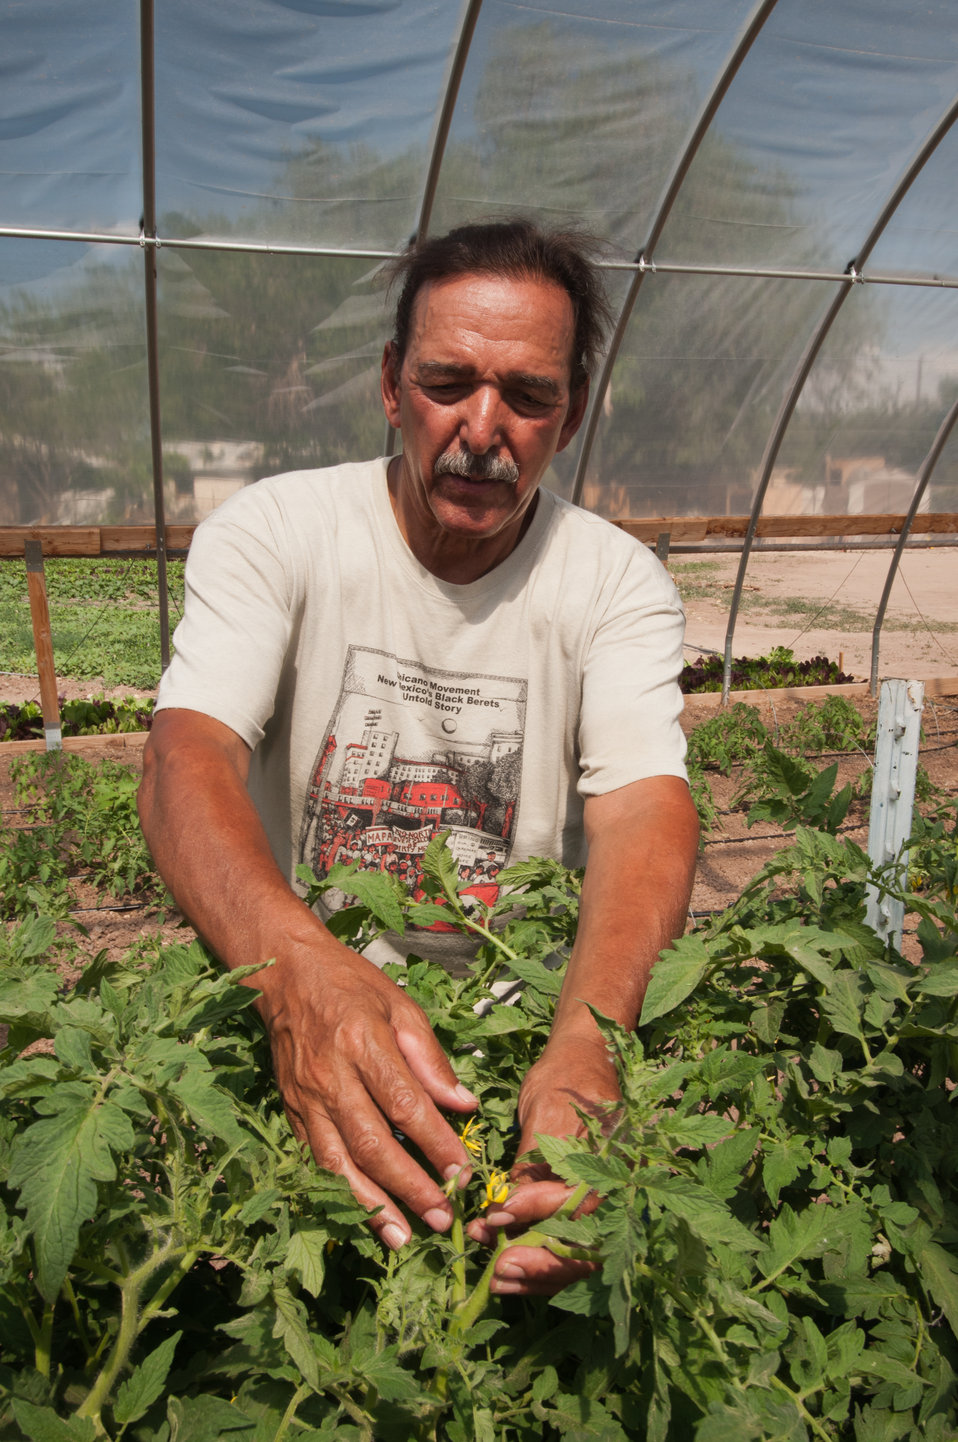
Los Jardines Institute Farm Albuquerque, NM Program Coordinator Richard Moore inspects tomatoes growing in a high tunnel house on Monday, Jun. 10, 2013. Los Jardines Institute Farm,a local sustainable farm, was able to acquire a loan from the La Montanita Co-op. La Montanita Co-op offers loans to local farmers and food producers for development. La Montanita Co-op is a 17,000 member socially responsible, locally owned food cooperative that supports a stable market for local farmers and producers of sustainable and organic regional/local agriculture in Albuquerque, NM. The co-op has a distribution center and two stores in Albuquerque; Valley and Nob Hill and stores in Santa Fe and Gallup, NM.